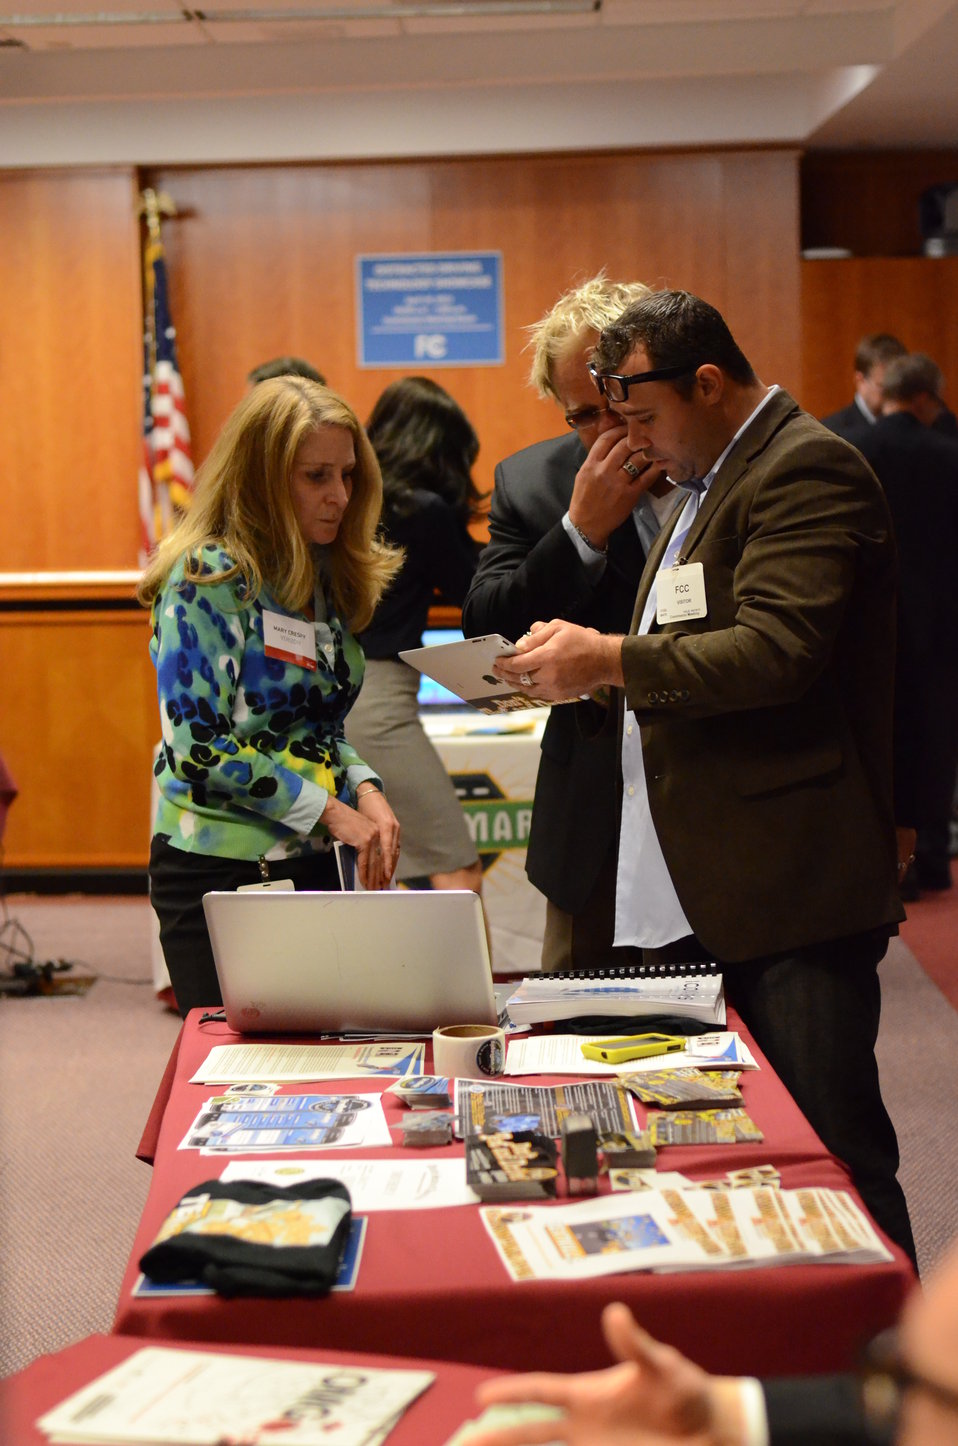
Distracted Driving Technology Showcase April 19, 2013